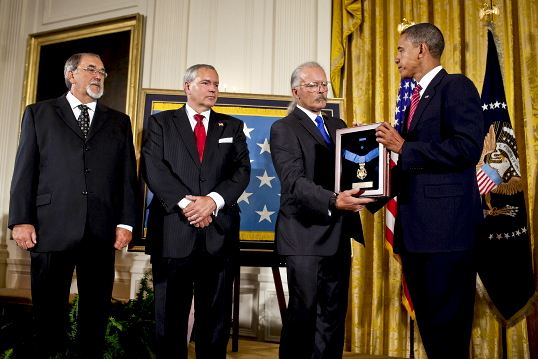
Chief Etchberger - MOH ceremony

President Barack Obama presents the Medal of Honor posthumously to the sons of Air Force Chief Master Sgt. Richard L. Etchberger, honored for heroic actions in combat in Laos in 1968, during a ceremony in the East Room of the White House, Sept. 21, 2010. His sons are Steve Wilson (from left), Corey Etchberger and Richard Etchberger.